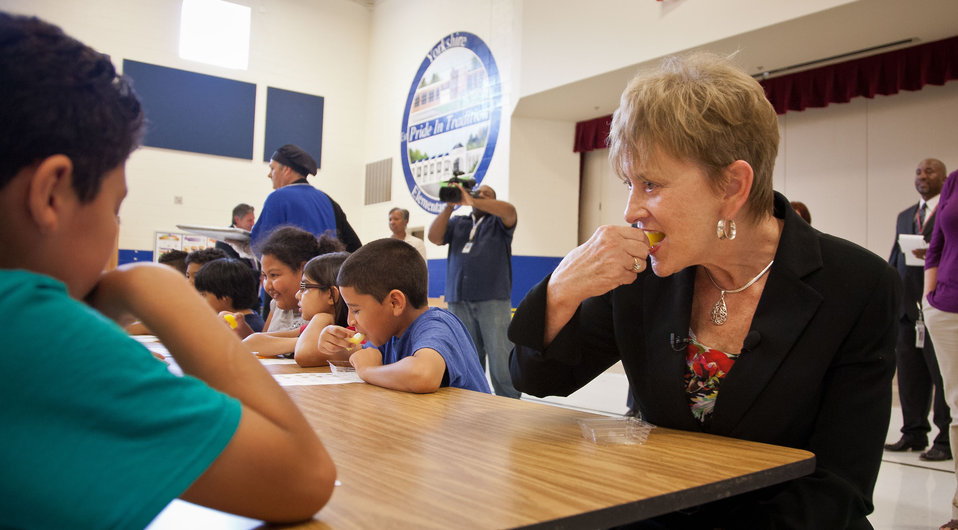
Agriculture's Food and Nutrition Service Deputy Under Secretary Dr. Janey Thornton spent time with more than 50 students from the 5th grade classes at Yorkshire Elementary School in Manassas, VA. The students participated in a taste testing of the new school lunch menu created to meet the new standards. Students tested a sample menu of black-bean filled pizza, pineapple spear, plantain, sunny broccoli and cauliflower toss, and an apple and celery cup with sunbutter dip (a peanut butter substitution), on Wednesday, September 5, 2012.